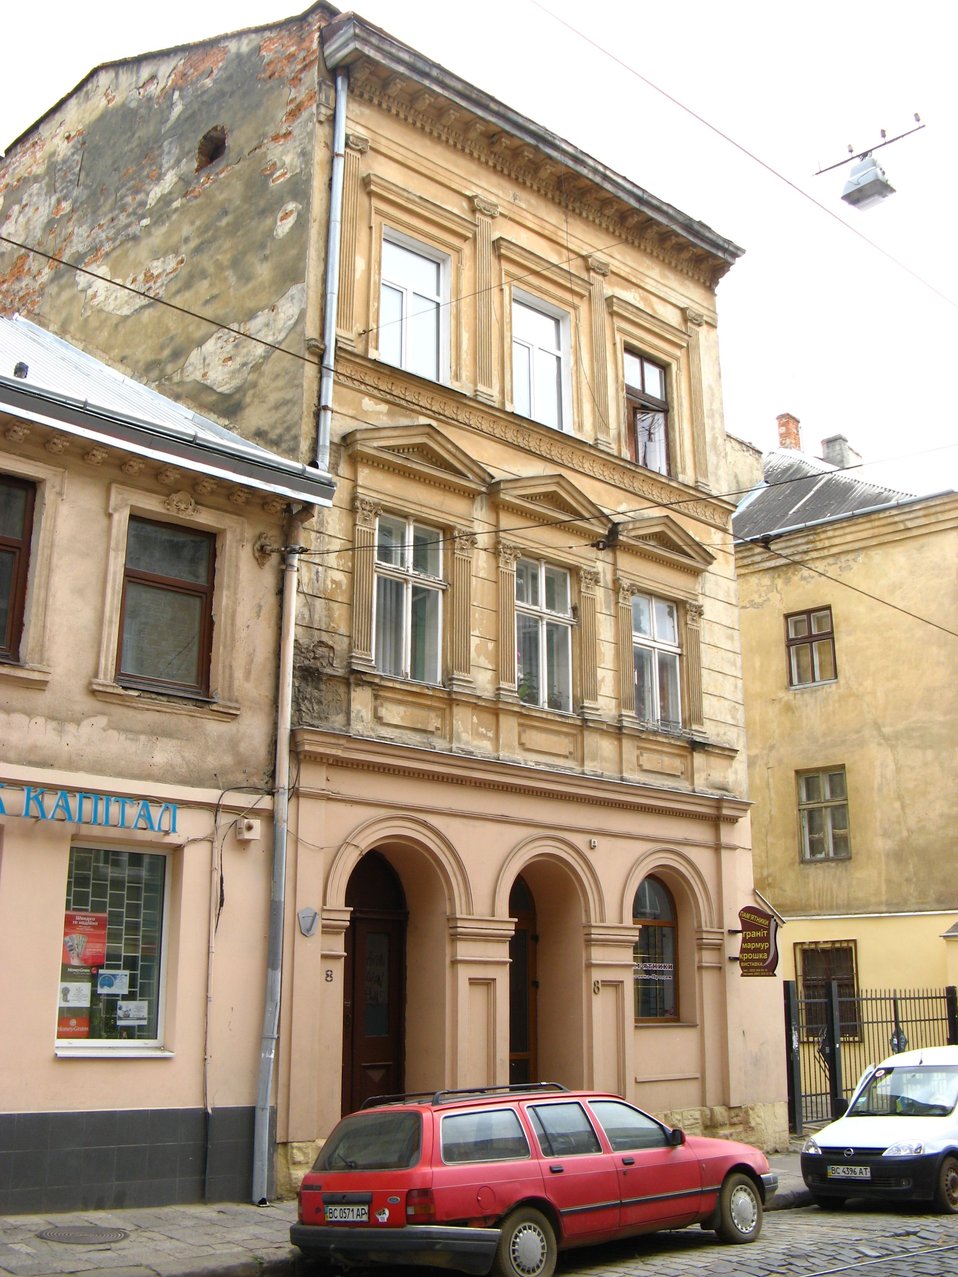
Українська: 08, вул. Б. Хмельницького (Львів)